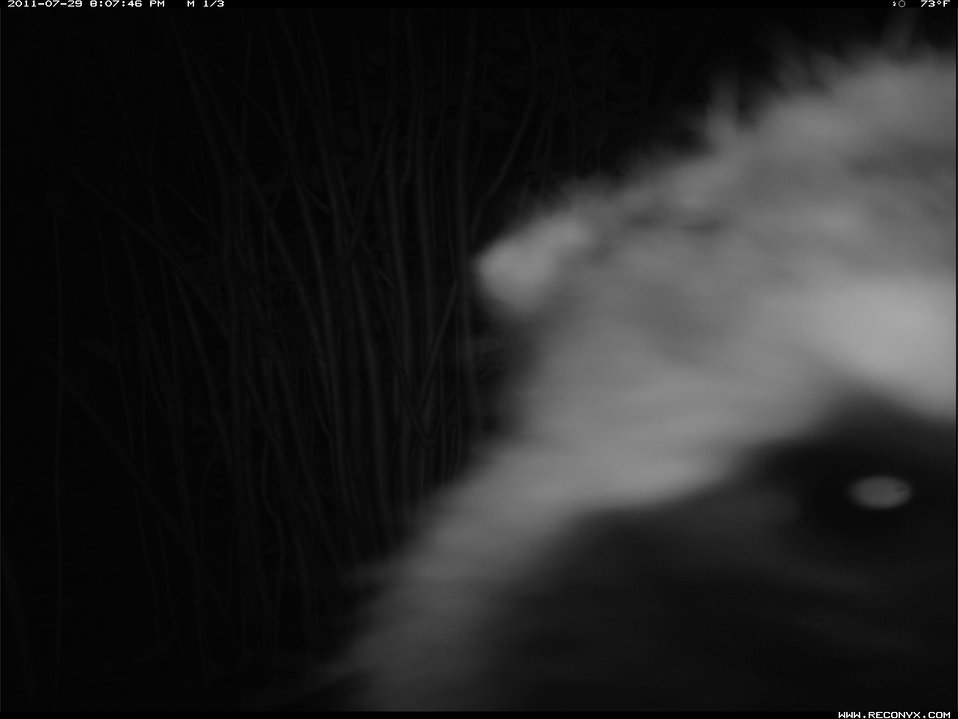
Raccoon Close-Up

This raccoon seems to be quite curious about the camera.